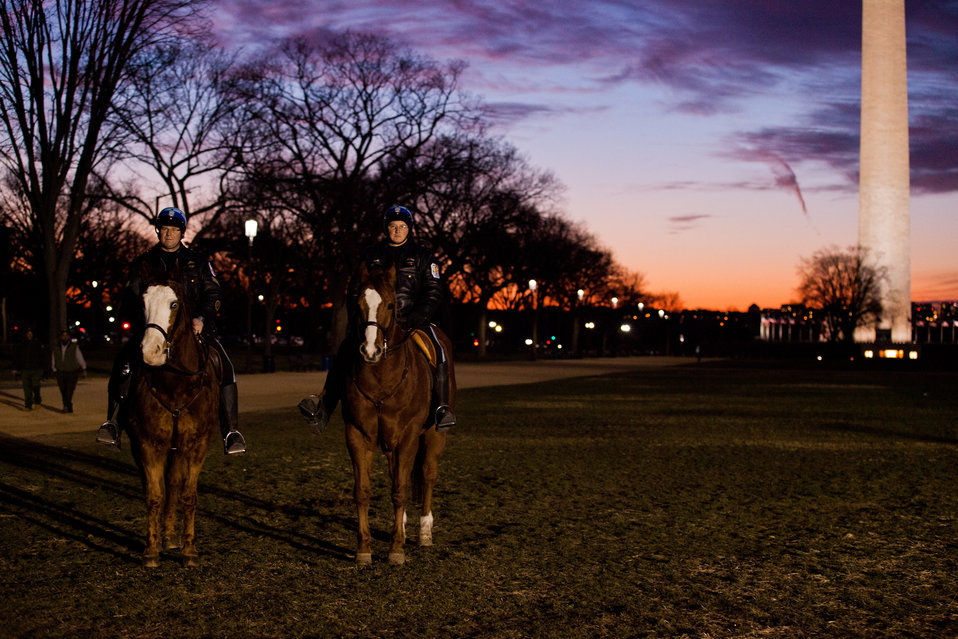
Two National Park Policeman on horseback with the new LED technology lighting the path to the Washington Monument in the background.